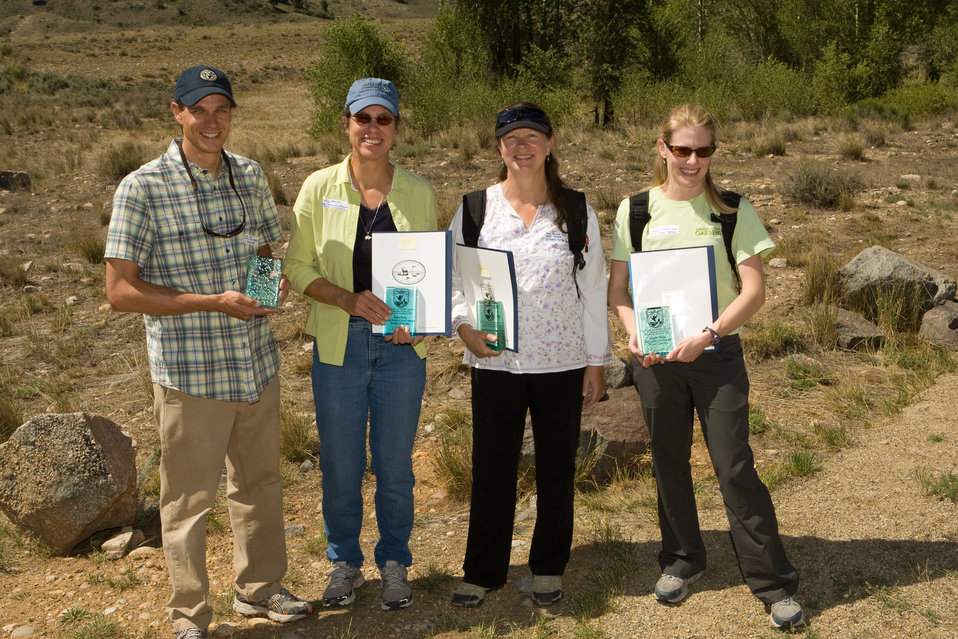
Colorado Rare Plant Conservation Initiative

The Colorado Rare Plant Conservation Initiative (RPCI) is a partnership of 23 statewide and regional agencies, private organizations, and academic institutions working to conserve 121 rare plants in Colorado. As part of these efforts the group developed the Colorado Rare Plant Conservation Strategy, developed Best Management Practices to reduce energy development impacts, addressed climate change, and developed focused strategies for the conservation of individual species at eight priority landscapes. The group has also worked to coordinate volunteer efforts for plant conservation across the state.